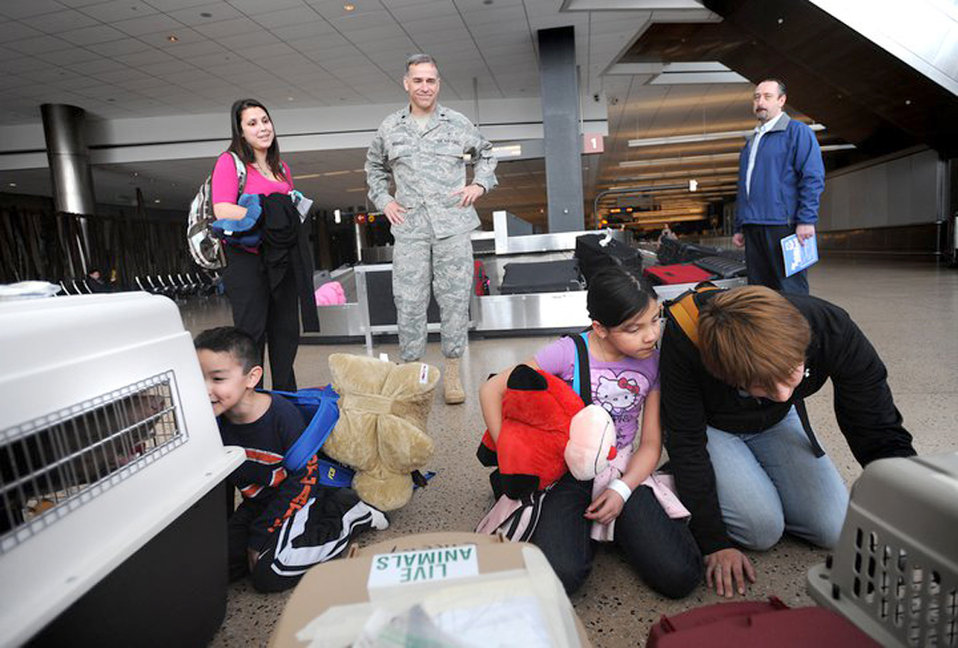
Departure from Japan

Caleb Velazquez (left), 5, his sister, Aubri, 8, and friend, Jess Alexander, check on Alexander's dogs as Monica Peck and Chaplain (Lt. Col.) Michael Husfelt look on March 19, 2011, at Seattle-Tacoma International Airport, Wash. More than 230 Department of Defense personnel and family members landed there after leaving Japan. Chaplain Husfelt is the 627th Air Base Group chaplain.